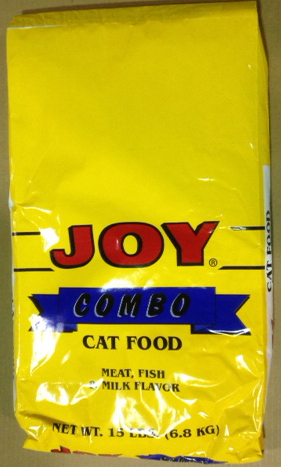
RECALLED – Dog Food, Cat Food

February 5, 2014 – Product Recall – Pro-Pet LLC Recalls a Limited Number of Dry Dog and Cat Foods Due to Possible Salmonella Contamination.